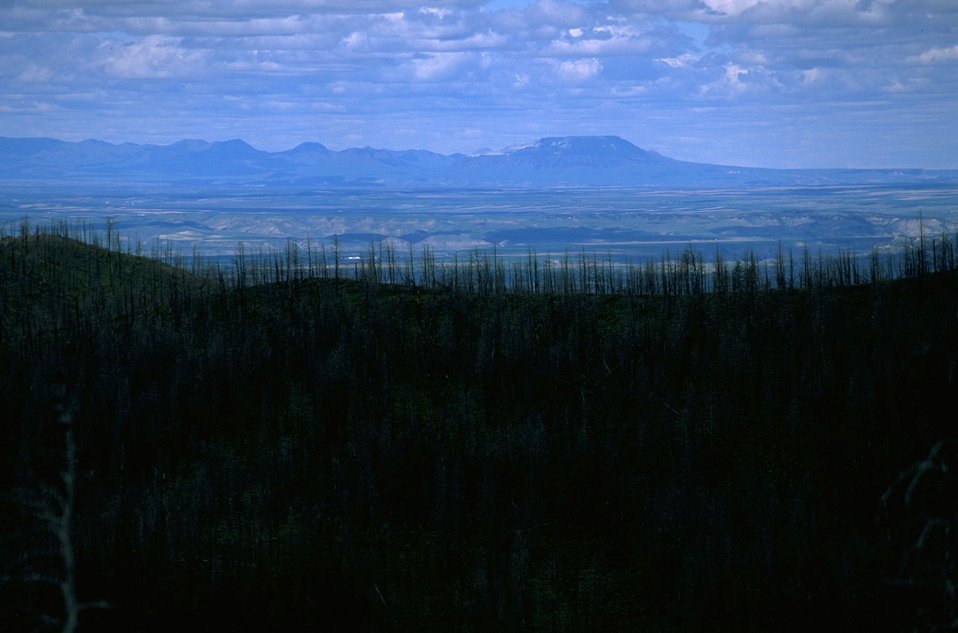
Unusual view of the silhouette of dead trees. Square Butte in the background